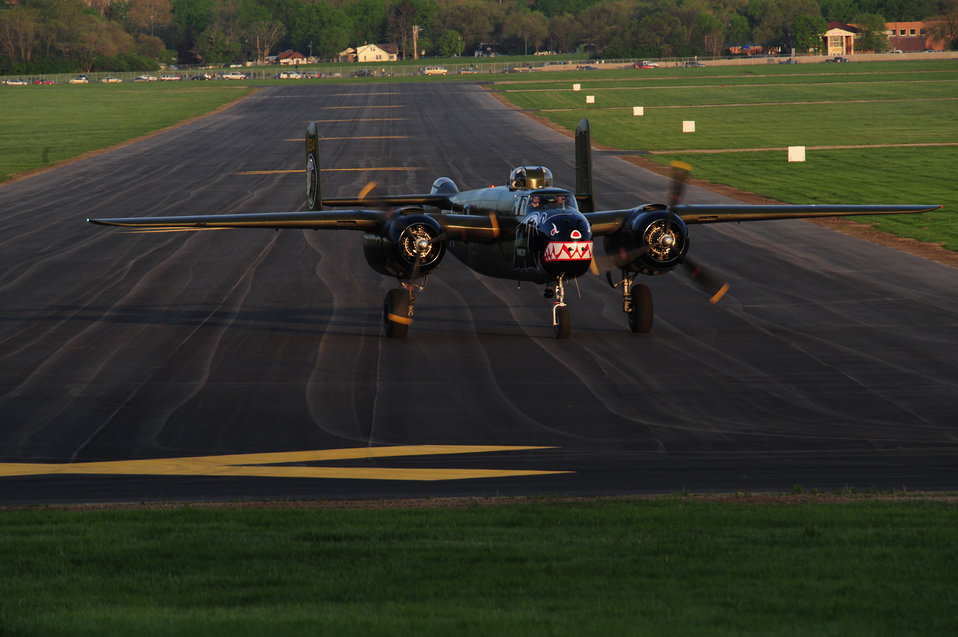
68th Doolittle Raiders Reunion

B-25 Mitchell bomber